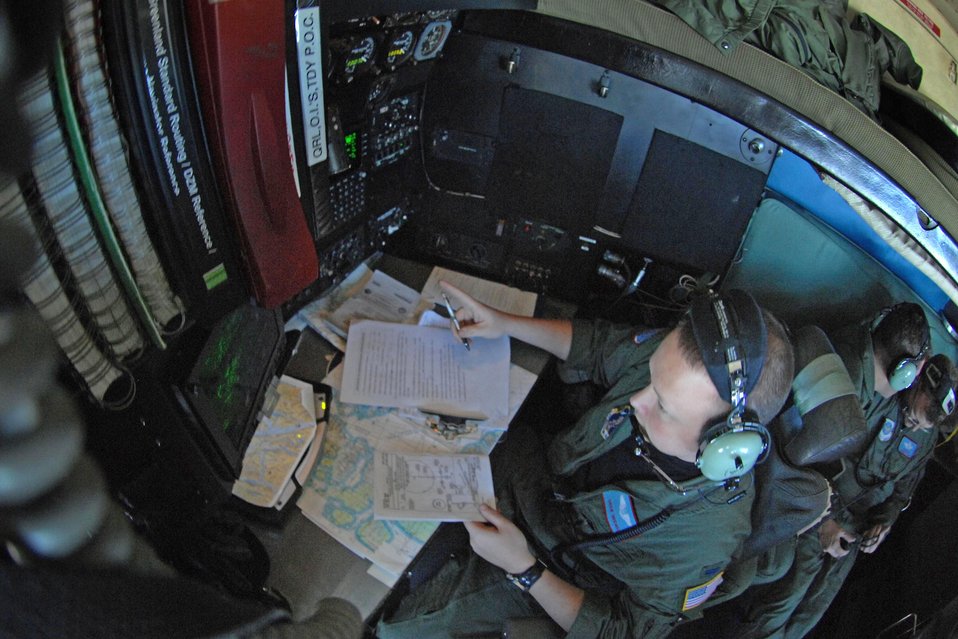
Polar mission

1st Lt. Drew Brewer navigates the sky July 28, 2010, over Greenland. The unit flies the only military aircraft in the world equipped with landing skis. It ferries scientists and supplies to the remote science research sites in Greenland. Lieutenant Brewer is with the New York National Guard's 109th Airlift Wing.